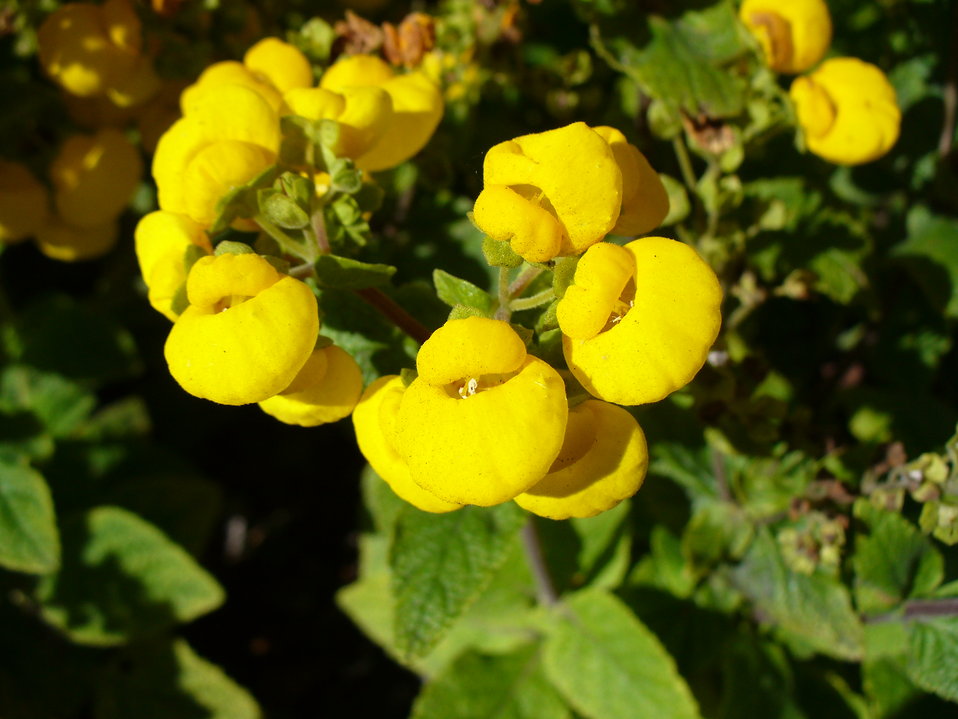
Calceolaria